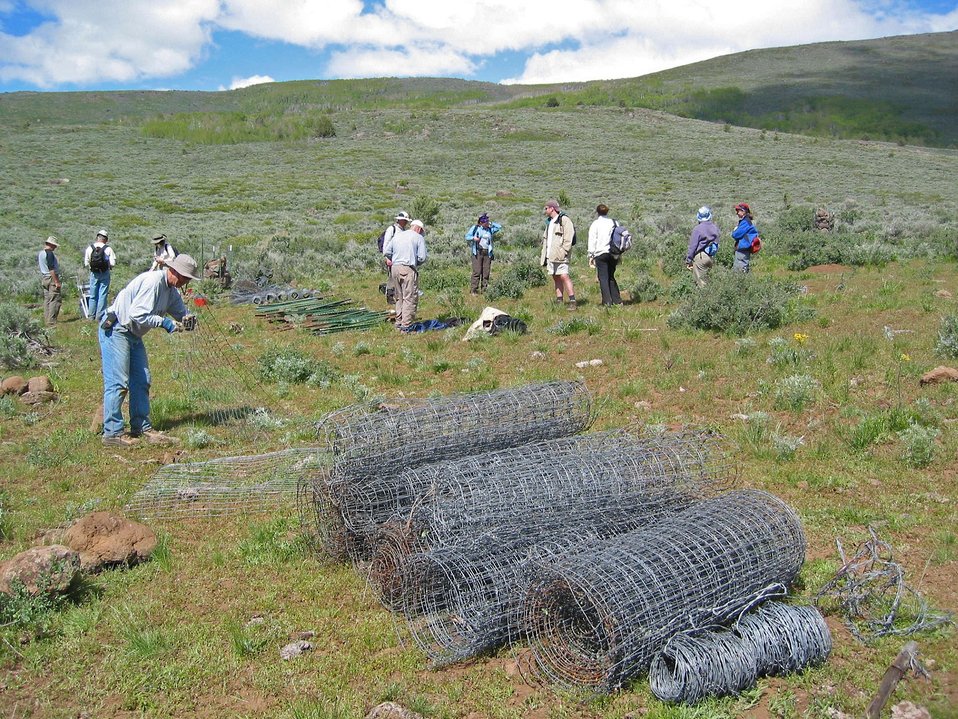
Volunteers work with BLM to remove over a 100 miles of old fence.